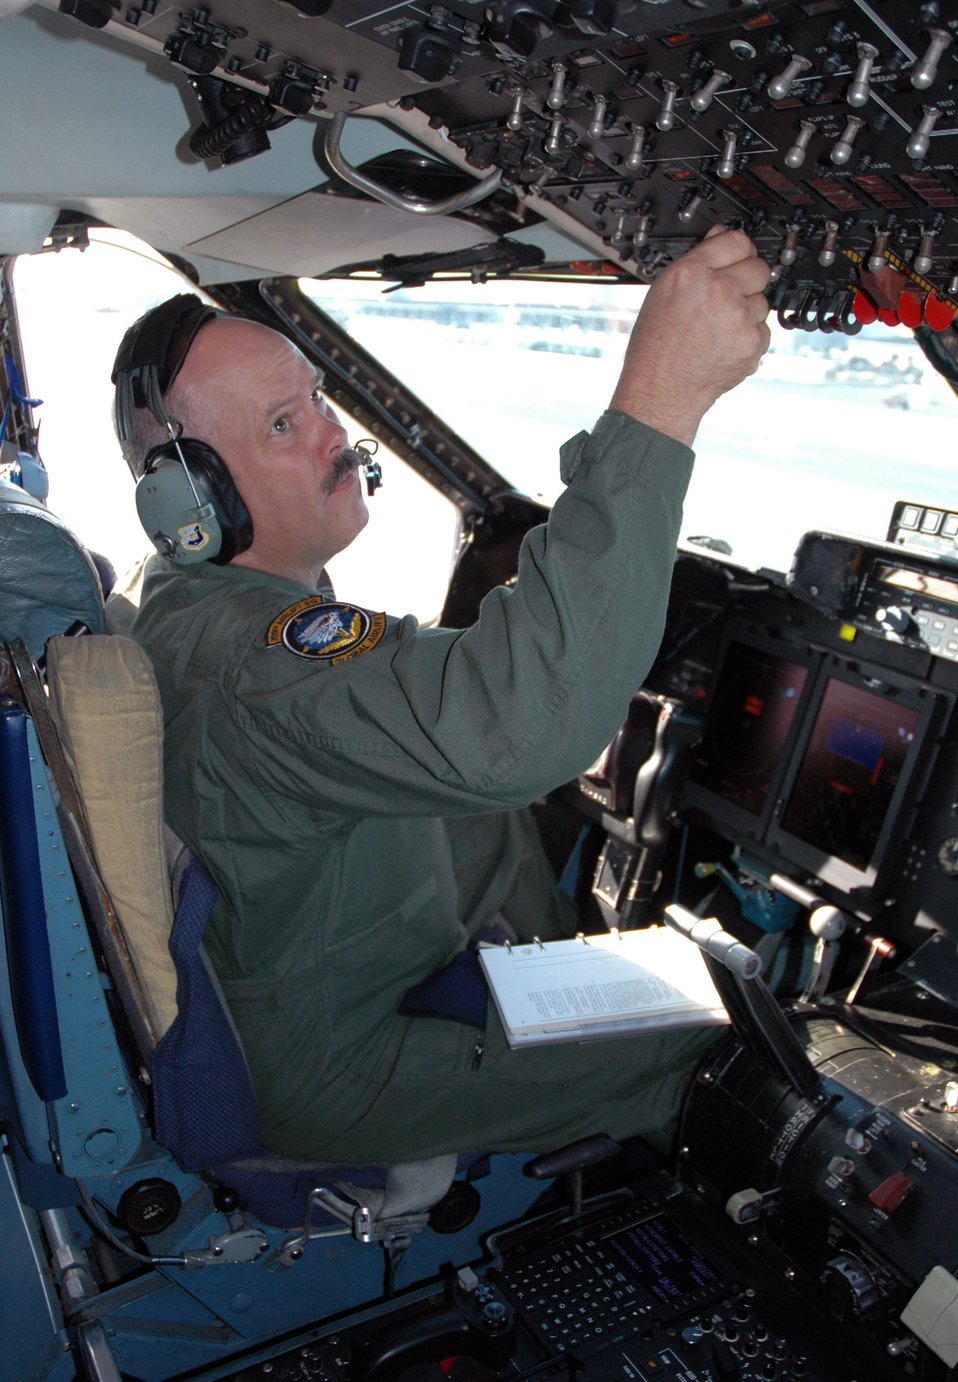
Reservists oversee Dover C-5 Avionics Modernization Program

Chief Master Sgt. Donald Cunningham performs a preflight check on a C-5 Galaxy from Westover Air Reserve Base, Mass., that received a modernized glass cockpit and avionics upgrade through the Avionics Modernization Program. Airmen from Dover Air Force Base, Del., and Travis AFB, Calif., are overseeing the Avionics Modernization Program modifications of all the Air Force Reserve Command C-5s and will manage the rest of the C-5 fleet's conversion through 2015. Chief Cunningham is the 512th Acceptance Check Flight superintendent.